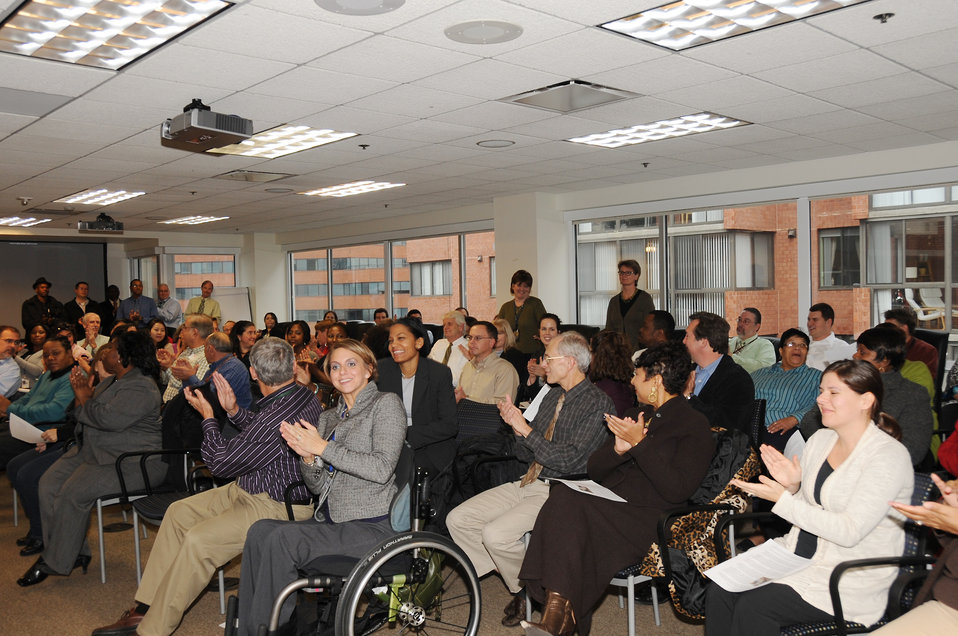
Honoring and Celebrating our Veterans

11.07.2012 Employees gathered in the Arlington Office to honor FWS Veterans